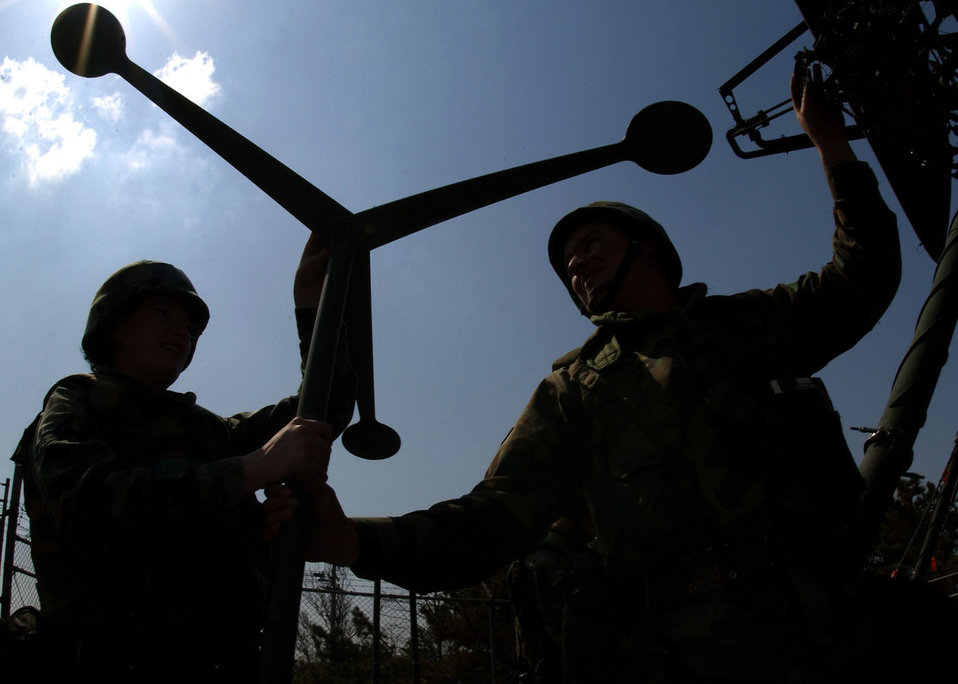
Camouflage

OSAN AIR BASE, South Korea -- Senior Airman Josh Newman and Airman First Class Leah Fisk from the 607th Combat Communications Squadron out of Camp Humphreys, Korea, spread light weight camouflage screening systems using batten spreaders over one of many 2,000 watt tactical wide band communications systems in here.